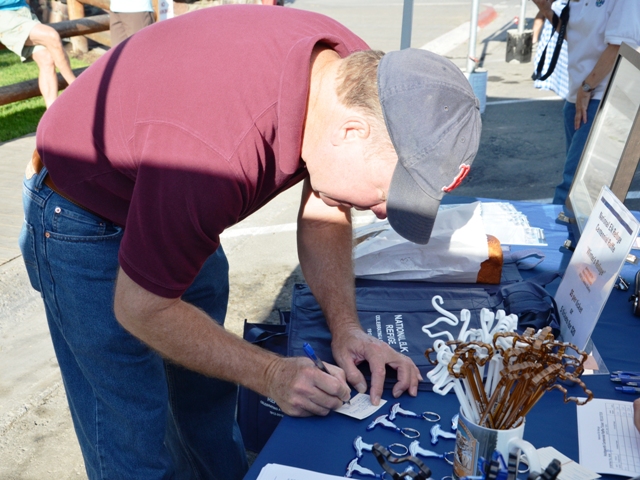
Maybe His Lucky Day?

A visitor fills out an entry slip for a raffle to win a photo of wintering elk on the National Elk Refuge. The raffle, sponsored by the Grand Teton Association, was part of the Refuge's centennial celebration. The raffle kickoff was held on July 7 at the first Farmer's Market of the 2012 season in Jackson, WY. The drawing took place on August 12 at the conclusion of the Refuge's centennial celebration weekend.

Credit: USFWS / Bobby Harkey, National Elk Refuge volunteer